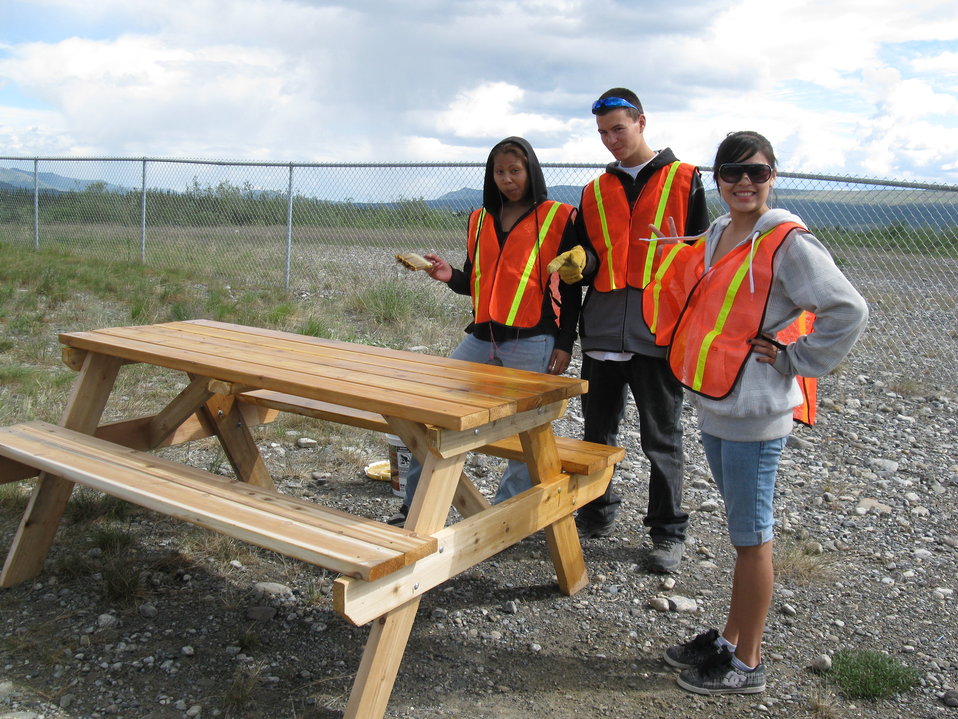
Arctic National Wildlife Refuge, AK